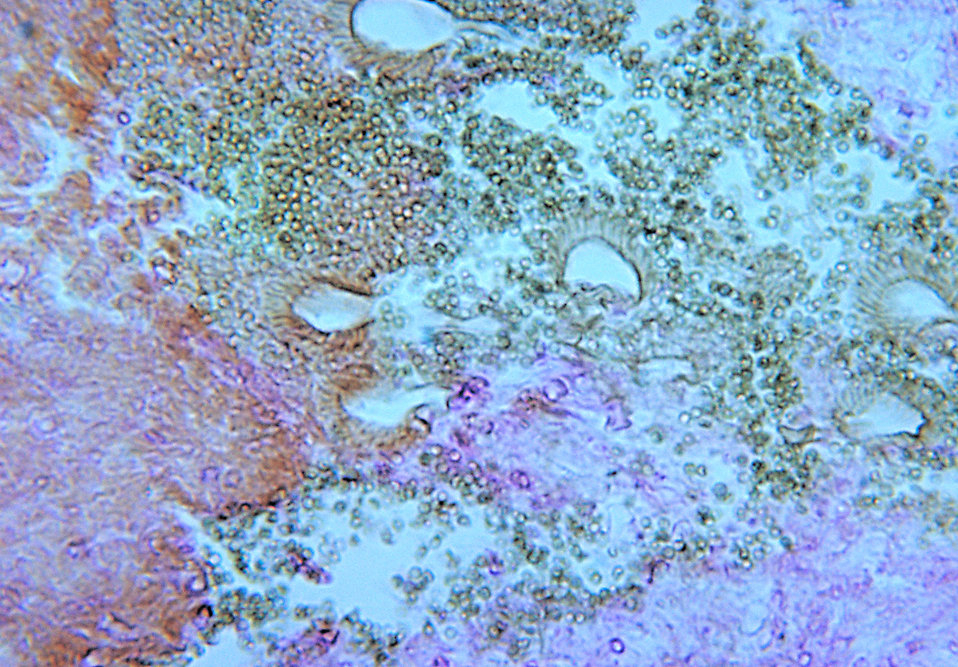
This was a case of pulmonary aspergillosis found in a caged sulfur-crested cockatoo due to Aspergillosis fumigatus.